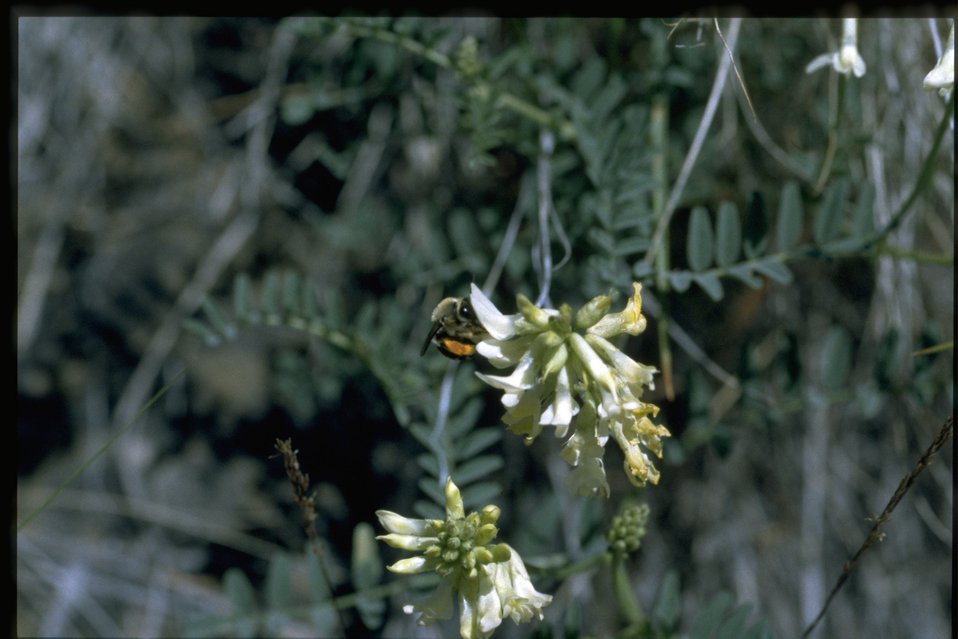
Medium shot of curvepod milkvetch (Astragalus curvicarpus).